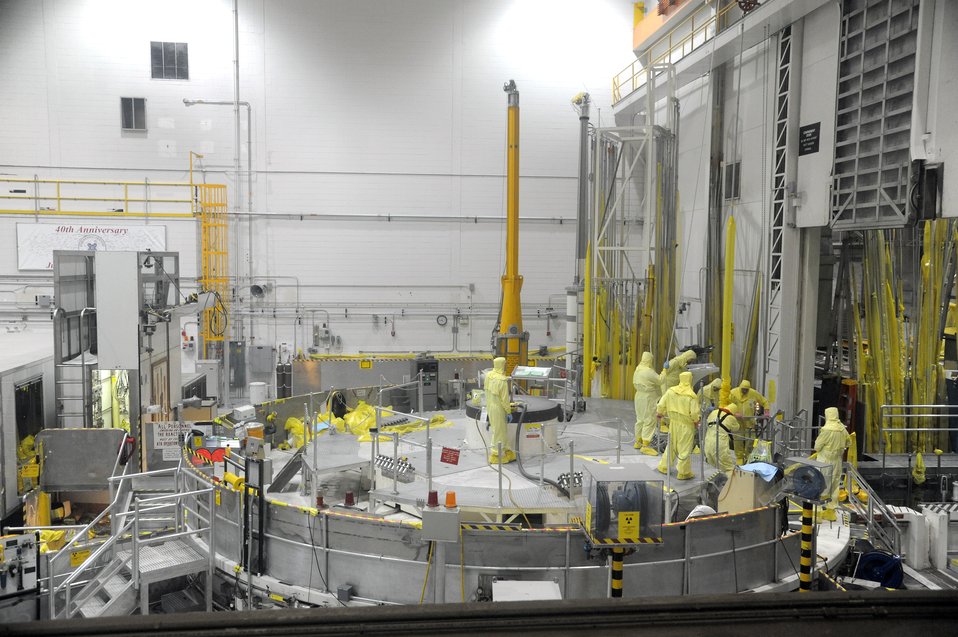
NUCLEAR OPERATORS PROFESSIONAL AT IDAHO NATIONAL LABORATORY'S ADVANCED TEST REACTOR ROUTINELY REFUEL THE REACTOR AND PERFORM MAINTENANCE FROM THE REACTOR TOP AREA.